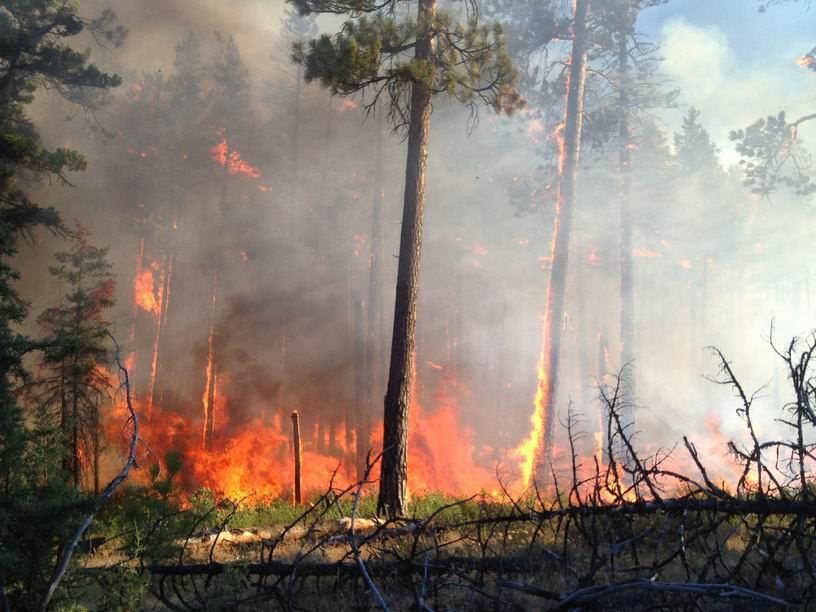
The Sunnyside Turnoff Fire near Warm Springs, OR began on Jul. 20, 2013 is under investigation and has consumed approximately 51,340 acres. The fire is approximately 95% contained.